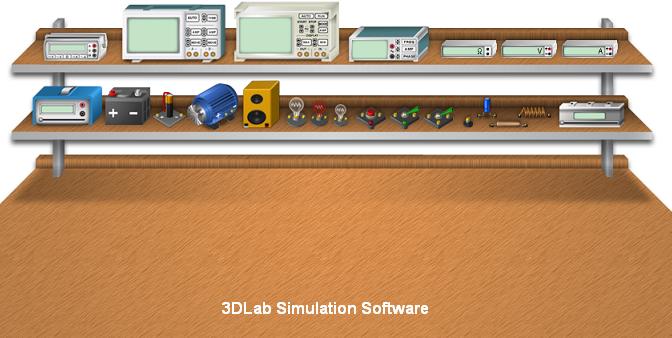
CircuitLogix, a software electronic circuit simulator which uses PSpice to simulate thousands of electronic devices, models, and circuits, developed by Colin Simpson.